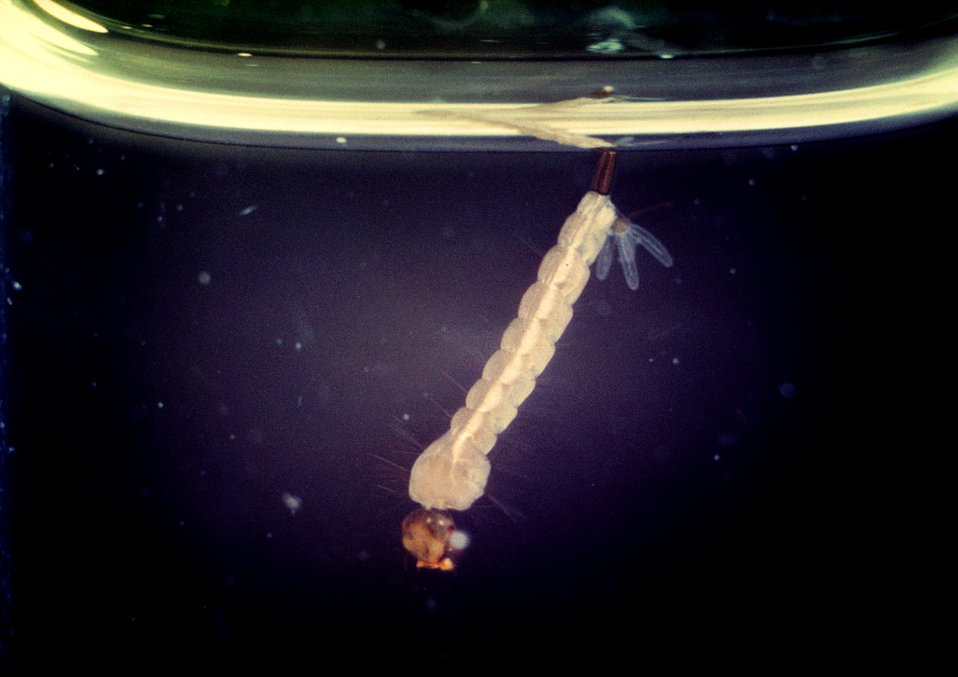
Fourth stage larva of Aedes aegypti.